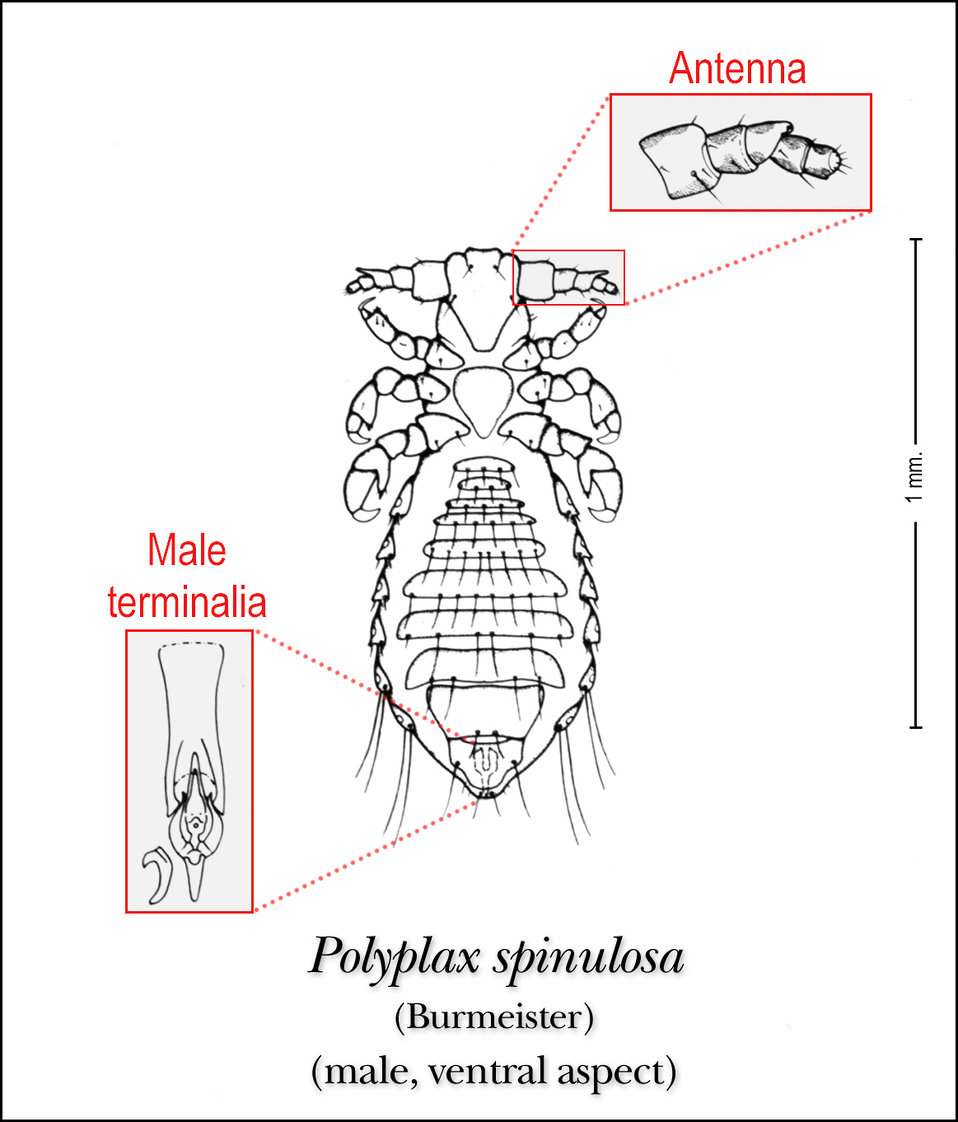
This illustration depicts the ventral features of the male louse, Polyplax spinulosa.